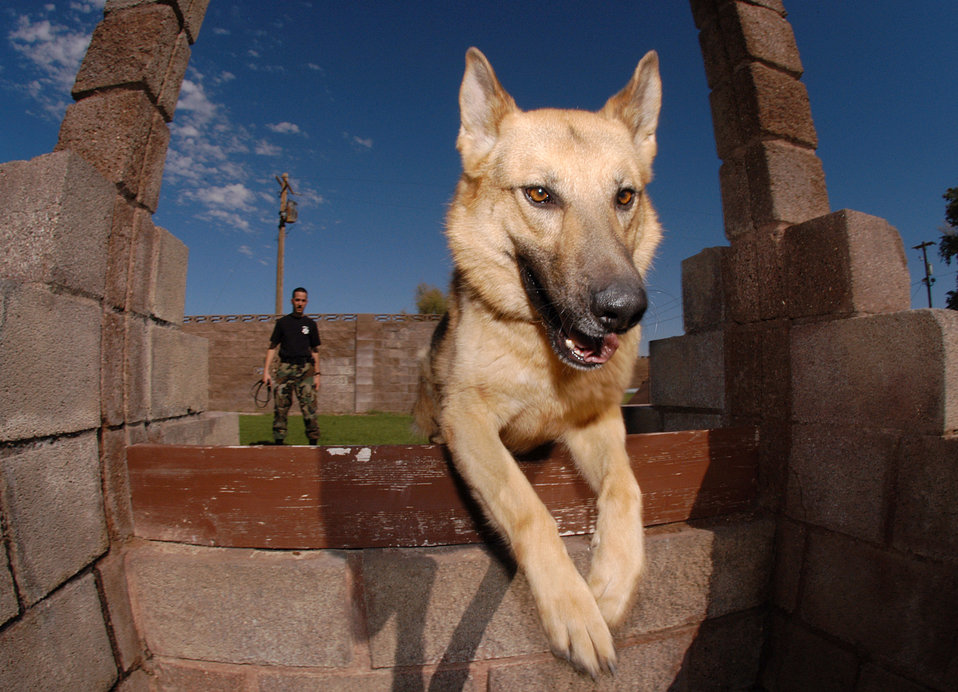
Teaching him new tricks

NELLIS AIR FORCE Base, Nev. -- Staff Sgt. Derek Donahey monitors his military working dog, Oran, as he jumps through a mock window at the working dog obstacle course here June 23. Sergeant Donahey and Oran are security forces members with the 99th Security Forces Squadron.